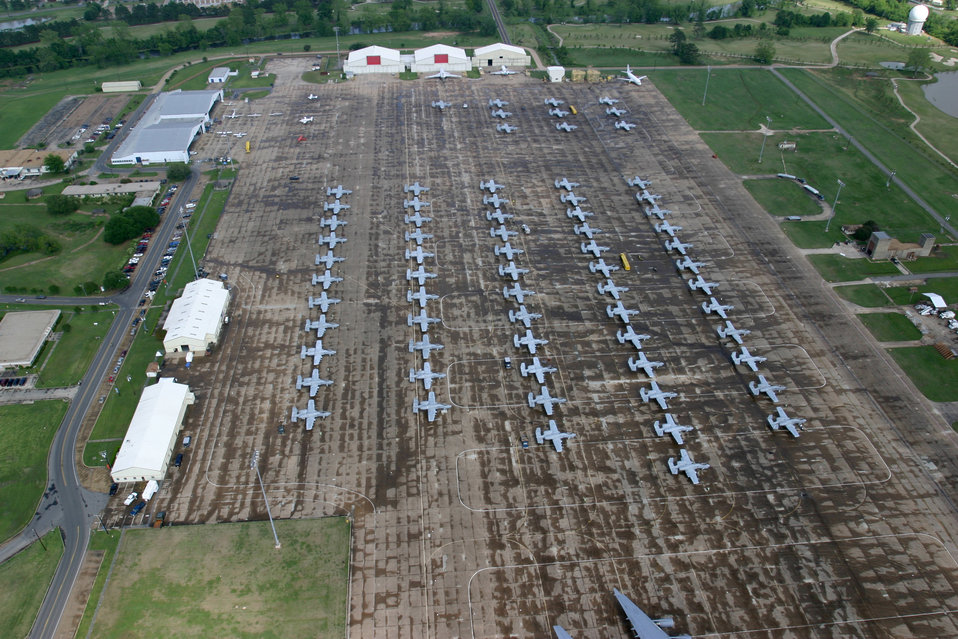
Stormy competition

ALEXANDRIA, La. -- Dozens of A-10 Thunderbolt IIs here for Hawgsmoke 2004 lined up on the ramp at England Air Park. The biannual bombing and tactical gunnery competition was canceled by severe weather April 30.